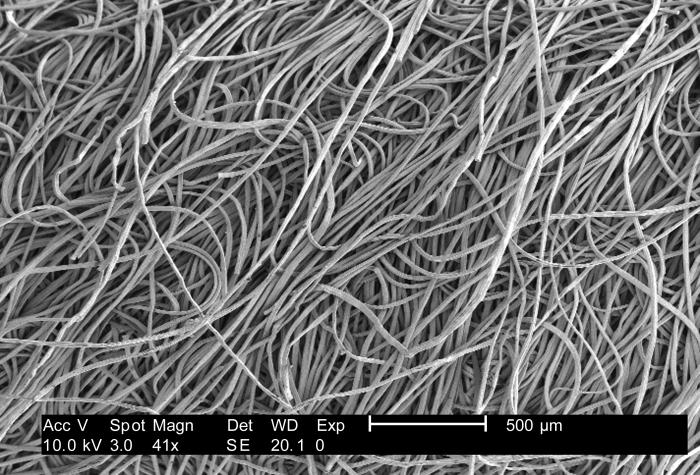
Under a low magnification of 41x, this 2007 scanning electron micrograph (SEM) depicted the fibrous configuration of a plain uninoculated rayon swab. This swab, as well as three other materials, including macrofoam (see PHIL 9736, 9737, 9738), polyester (see PHIL 9735), and cotton (see PHIL 9732, 9733) were scanned for a CDC study involving their efficiency in recovery of Bacillus anthracis bacterial spores from steel coupons that had been inoculated with a spore suspension of known concentration. The article discussing the description of this swab material analysis, and the analytical results was published in 'Emerging Infectious Diseases', Vol. 10, No. 6, June, 2004, and was entitled, Swab Materials and Bacillus anthracis Spore Recovery from Nonporous Surfaces. A link to this article is found below.